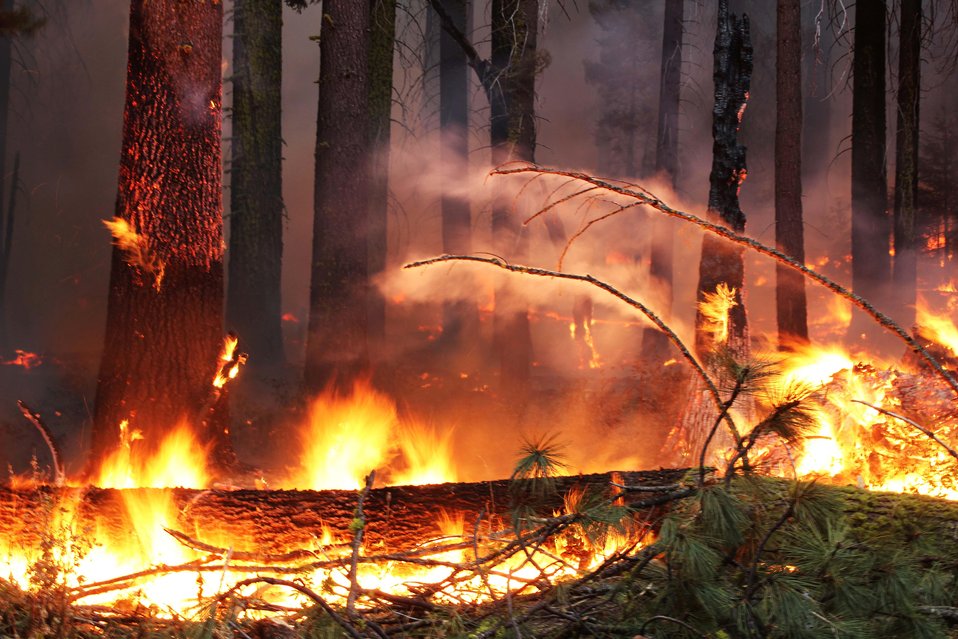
The Rim Fire in the Stanislaus National Forest near in California began on Aug. 17, 2013 and is under investigation. The fire has consumed approximately 235,841 acres and is 70% contained.